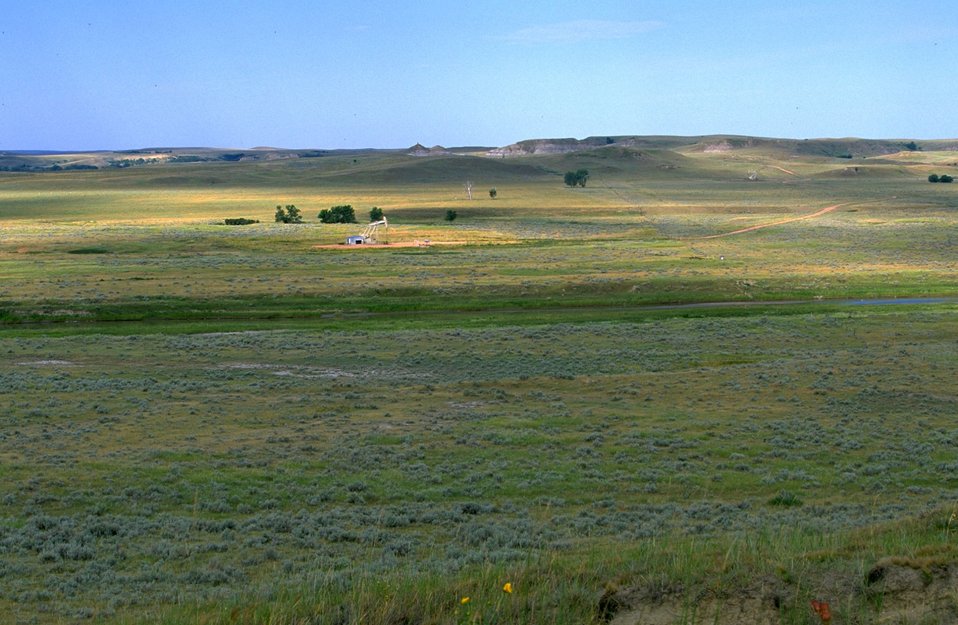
Cedar Hills unit.